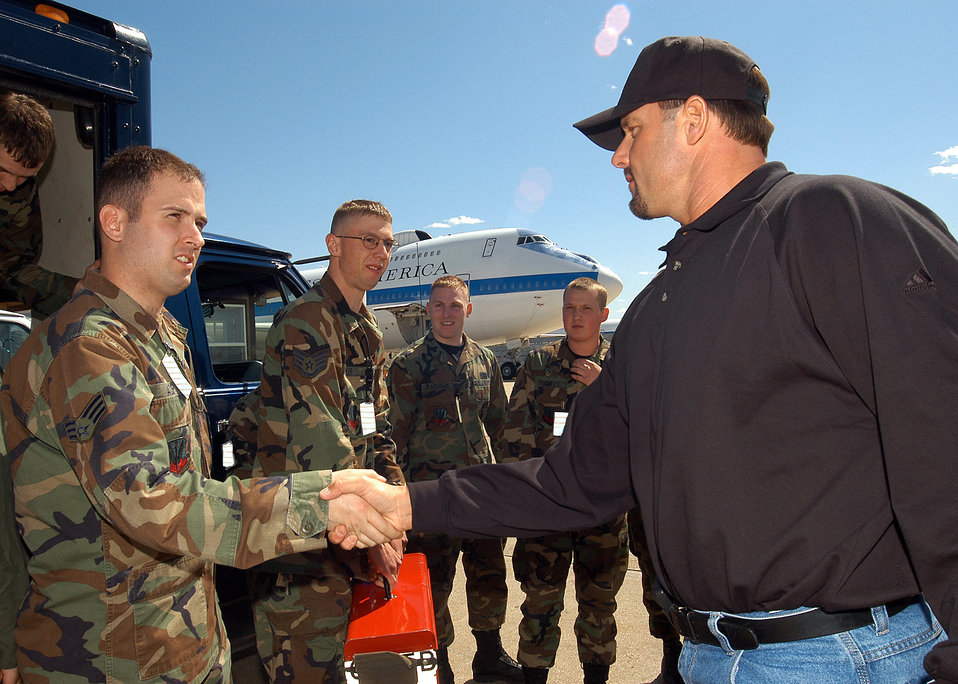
'The Rocket' lands at Offutt

OFFUTT AIR FORCE BASE, Neb. -- Houston Astros pitcher Roger Clemens meets Senior Airman Paul Asp and other Airmen on the flightline here April 26. Mr. Clemens, known in baseball circles as